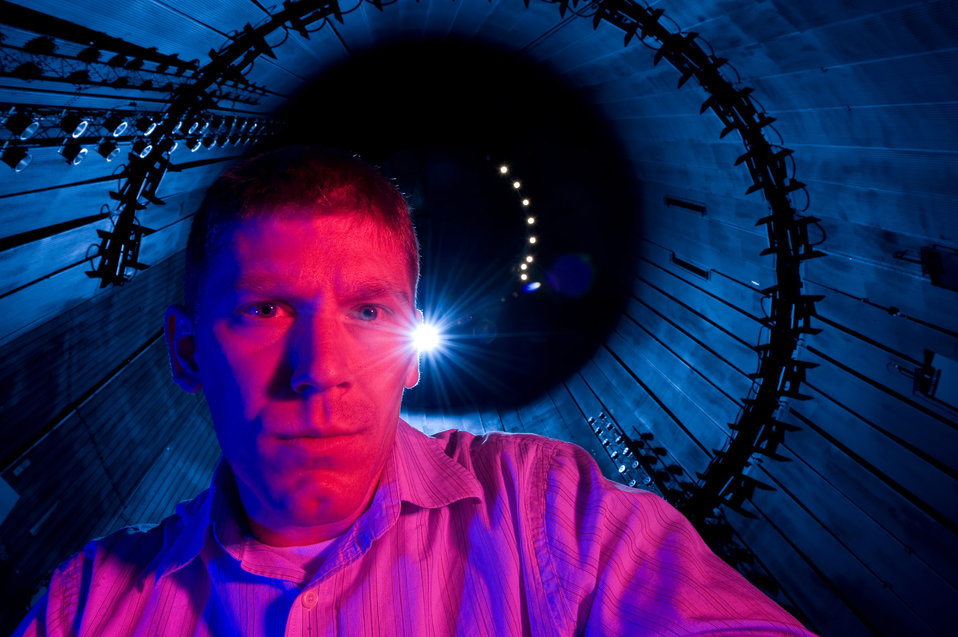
Wind power at Arnold AFB

Mike Lazalieron performs an on-site visit on the test platform near the bottom of the Mark 1